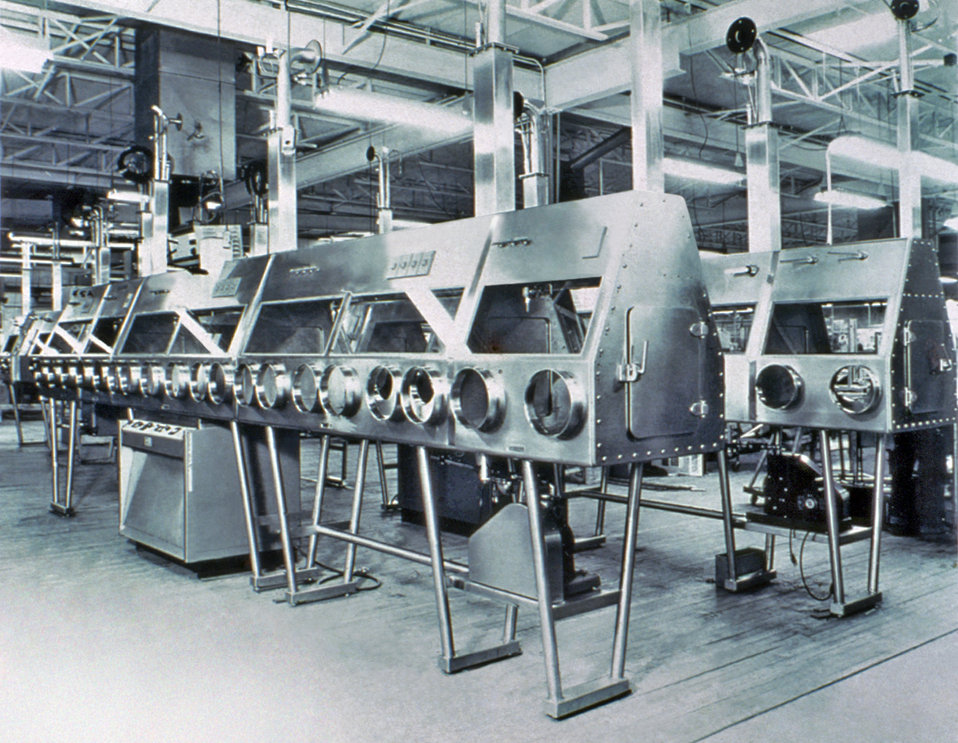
This 1976 photograph showed CDC's first laboratory-isolation facility located outside of Building-7.